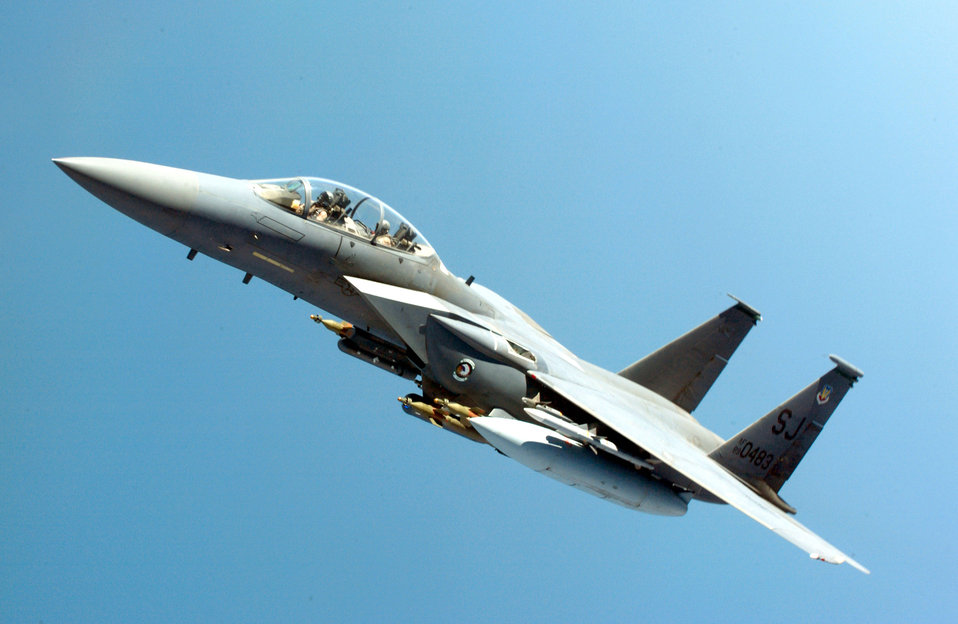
Strike Eagle

OVER IRAQ -- An F-15E Strike Eagle deployed from Seymour Johnson Air Force Base, S.C. manuevers away from a KC-10 Extender after receiving fuel here recently. Both aircraft are supporting Operation Iraqi Freedom.